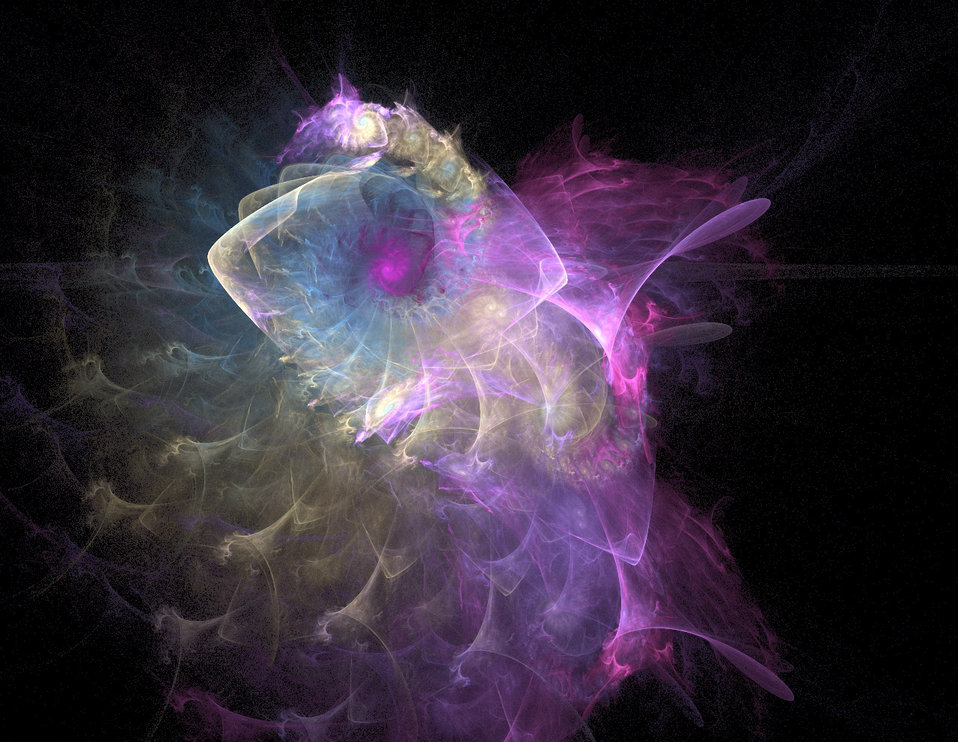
Pastel swirls

Pretty pastel swirls.